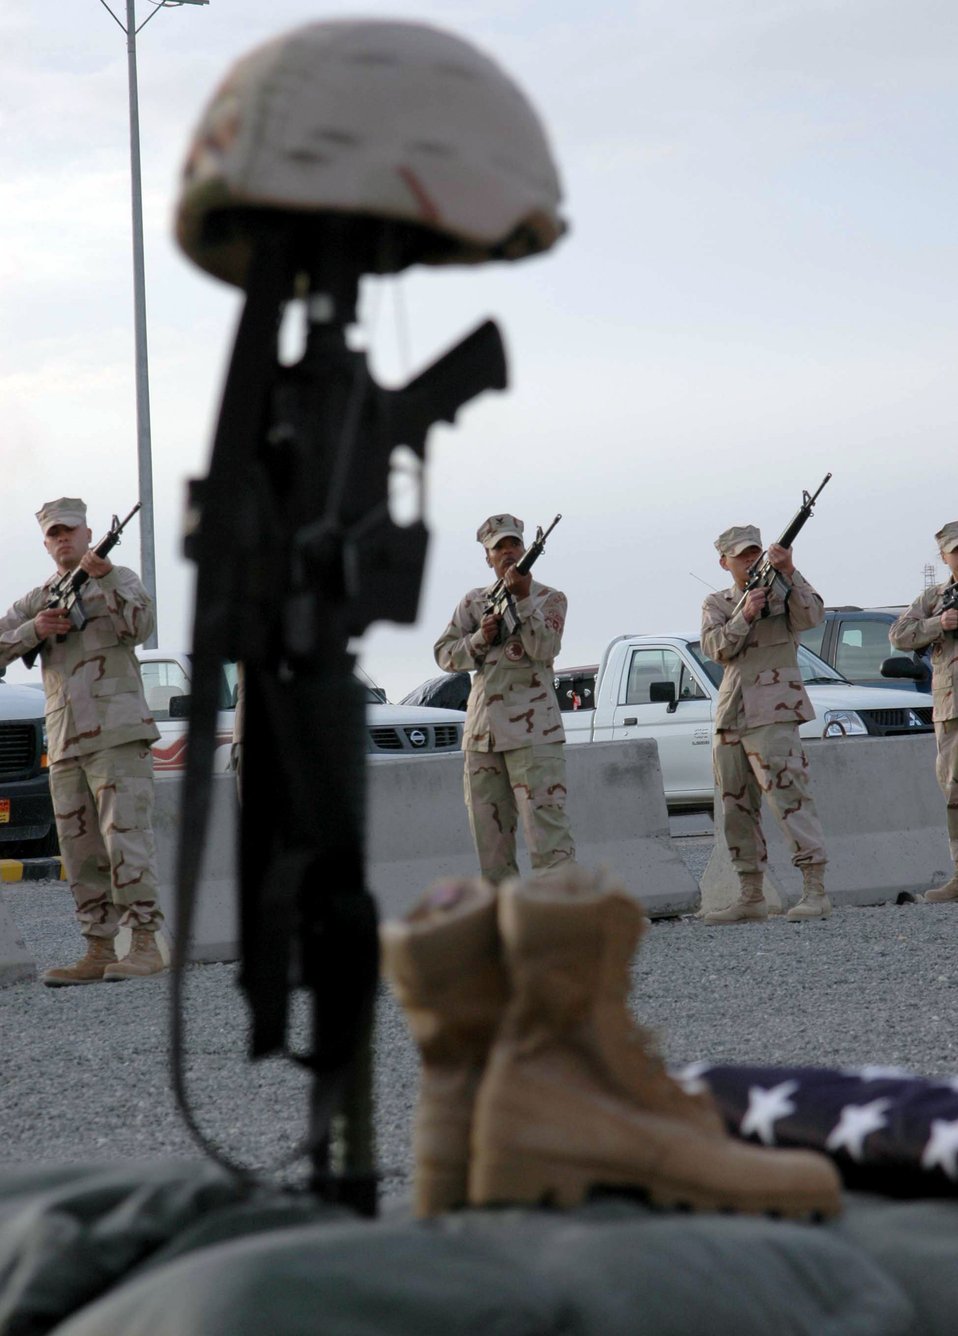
Memorial services held for fallen Airmen

SOUTHWEST ASIA (AFPN) -- A firing party with the 386th Air Expeditionary Wing here performs a 21-gun salute for two fallen Airmen during a memorial retreat Jan. 27. More than 500 people attended the retreat which honored Tech. Sgt. Jason Norton and Staff Sgt. Brian McElroy. The Airmen were killed in Iraq by an improvised explosive device Jan. 22.